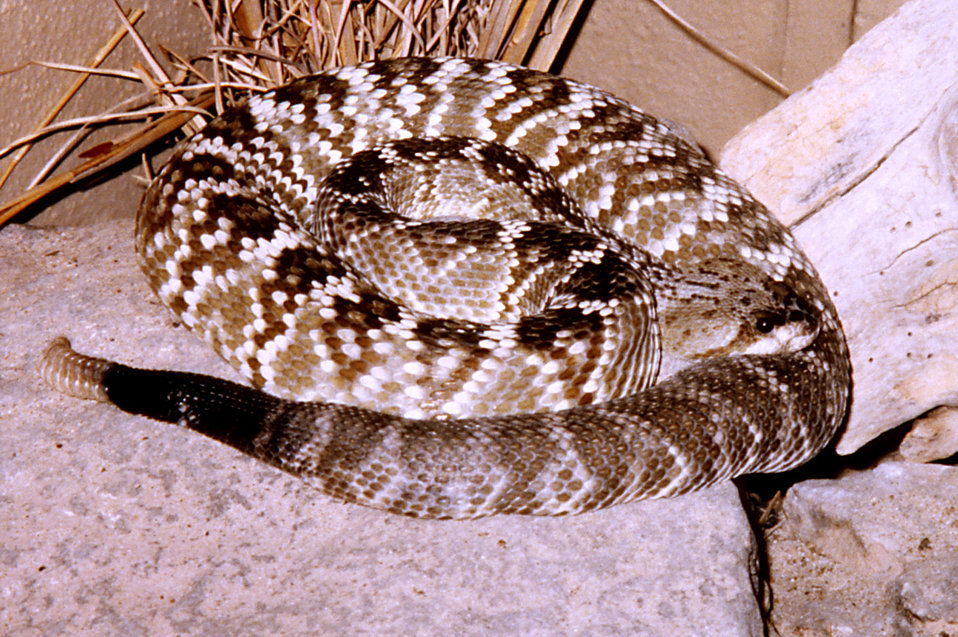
This is a 'northern black tailed' rattlesnake, Crotalus molossus molossus. It's range includes portions of southern and central Arizona, southern New Mexico and southwestern Texas and adjacent Mexico (Connant 1975). In the eastern aspect of its range, it inhabits the wooded canyons, cliffs and rock piles in the west-central Edwards Plateau, and the adjacent Chihuahuan Desert. Though present only in the southwestern extreme of the hurricane prone region of North America (Tennant, 1998), it is of importance to those living in these regions, and first-responders offering aid to those affected by such a disaster.Typically a mild tempered rattlesnake, it still packs moderate, to large amounts of potent venom. Because of apparent antigenic differences in black tailed rattlesnake venom, treating bites with 'CroFab' antivenin can require comparatively larger doses than bites of other rattlesnake species (Consroe et al., 1995; Sanchez et al 2003a, 2003b; Yarema and Curry, 2005)